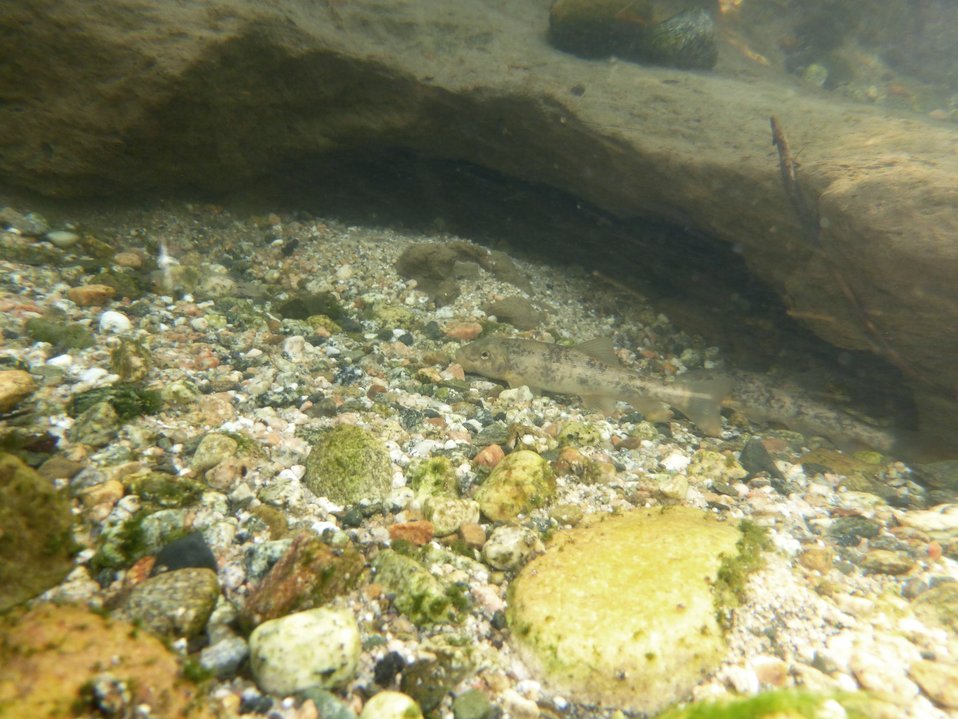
Santa Ana sucker

The Santa Ana sucker was listed as threatened in April 2000.